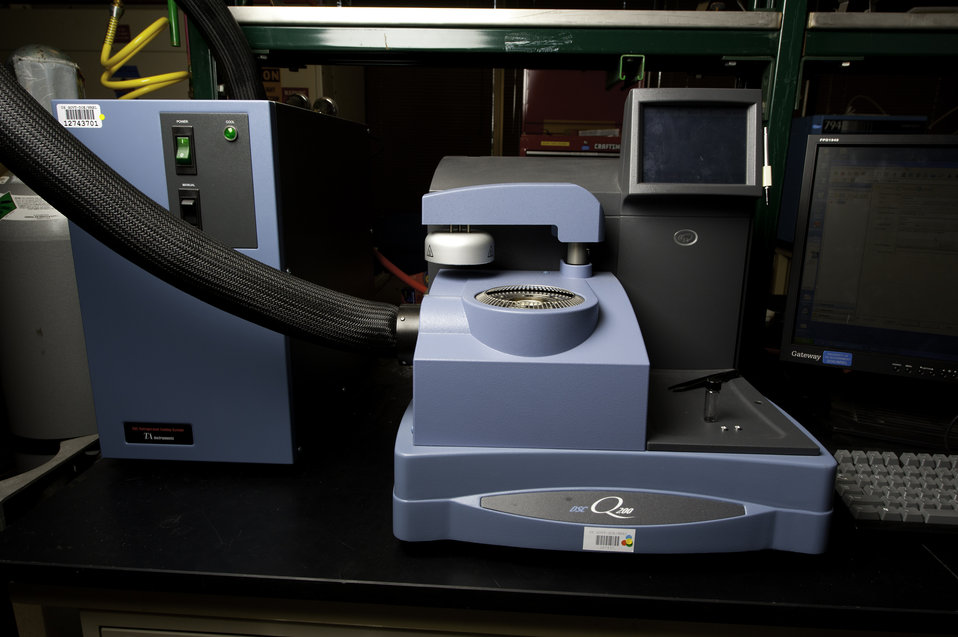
Differential scanning calorimeter at the Battery Testing Laboratory at the National Renewable Energy Laboratory.